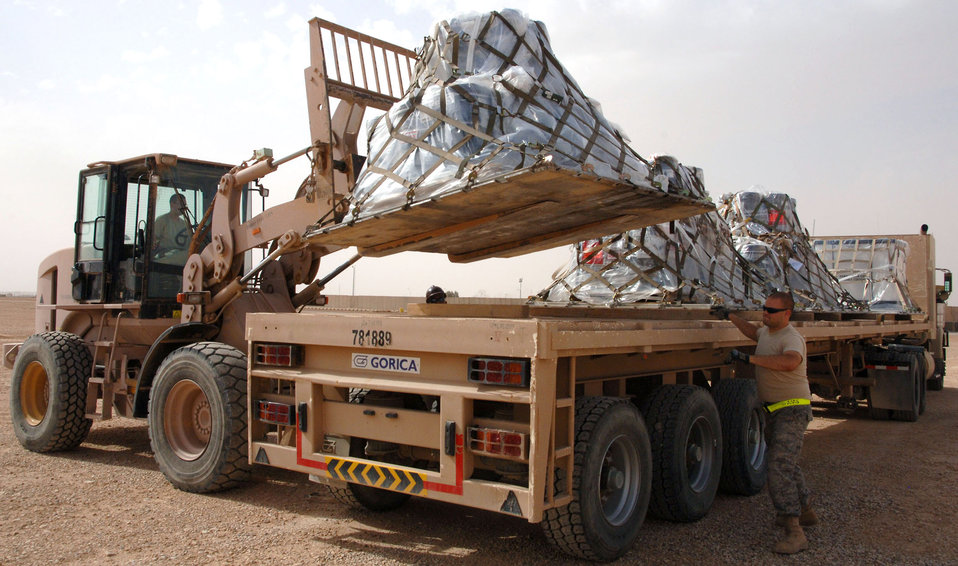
Aerial porters unload cargo for all of Iraq

Airmen assigned to the 532nd Expeditionary Operations Support Squadron Air Mobility Flight load a cargo pallet on to a semi-truck April 20, 2011, at Al Asad Air Base, Iraq. The flight recently took on a commercial cargo mission and made history by unloading its first Boeing 747 in April.